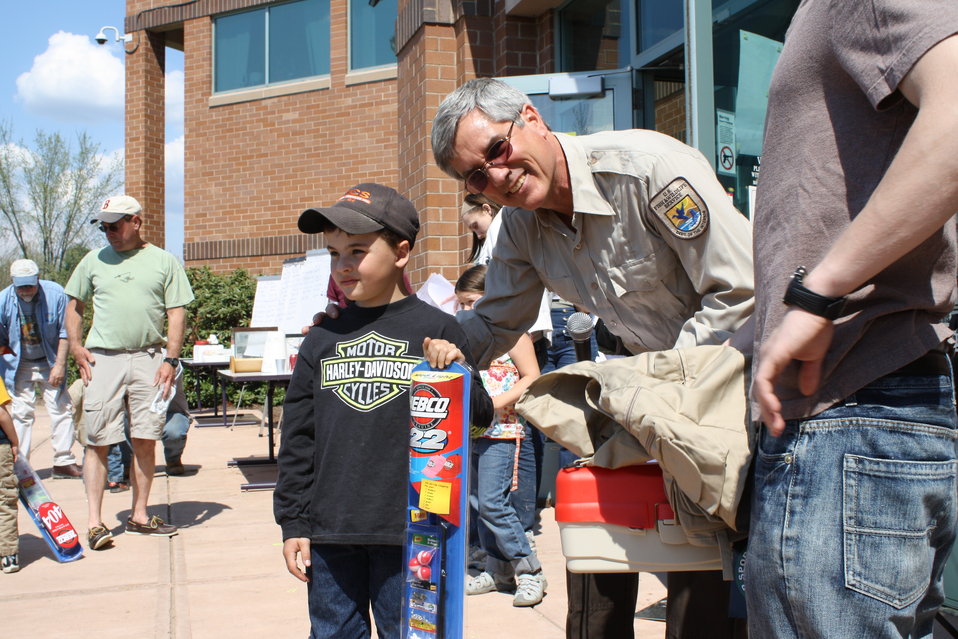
1st prize middle

A winner at the USFWS fishing derby in Hadley, MA on May 7th.